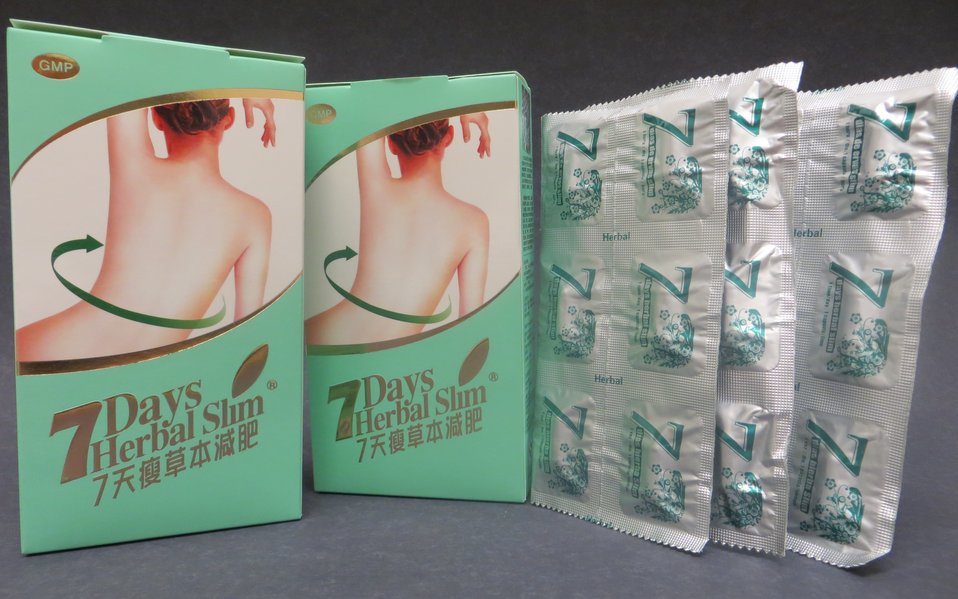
7 Days Herbal Slim

December 19, 2013 - The FDA is advising consumers not to purchase or use '7 Days Herbal Slim,' a product promoted and sold for weight loss. The product was found to contain undeclared sibutramine. For more information, go to www.fda.gov/Drugs/ResourcesForYou/Consumers/BuyingUsingMe...

And read this Consumer Update: Beware of Fraudulent ‘Dietary Supplements’